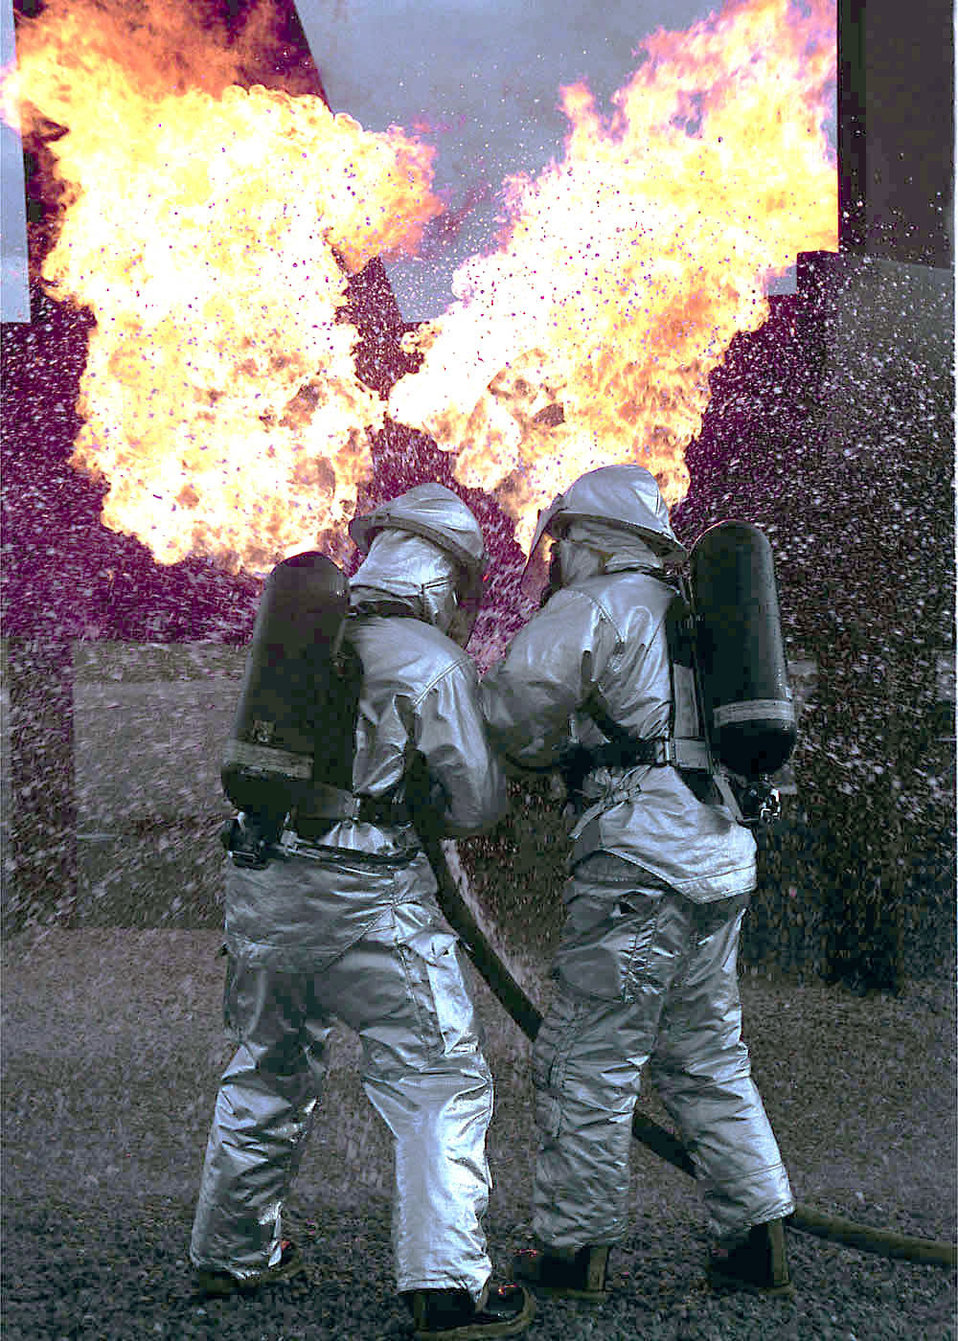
Fire assault

ROYAL AIR FORCE LAKENHEATH, England -- Members of the 48th Civil Engineering Squadron assault a fire on a F-15 mock plane at a fire pit during a training exercise on August 3, 2000. The 48th CES held a joint exercise with an English fire department, the Suffolk Fire Brigade, on quick responses to aircraft and vehicle accidents. The exercise is conducted twice a year.